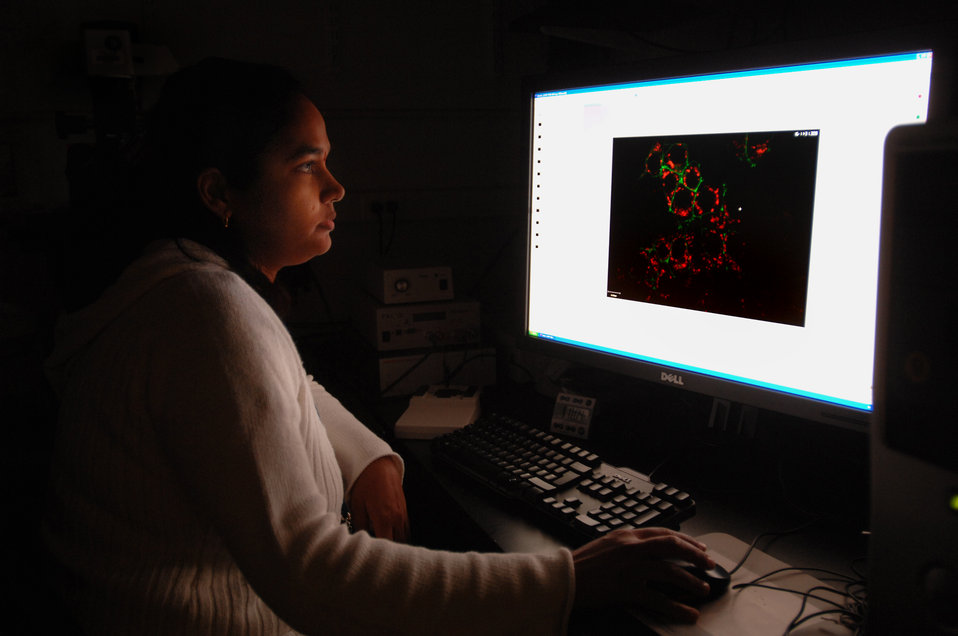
IRP Lab Researcher

Vanaja Jaligam, M.S (Contractor, Integrative Neuroscience Section) is shown quantifying changes in protein dynamics and function in individual cells by measuring the fluorescence intensity of tagged proteins—for example, dopamine transporter.